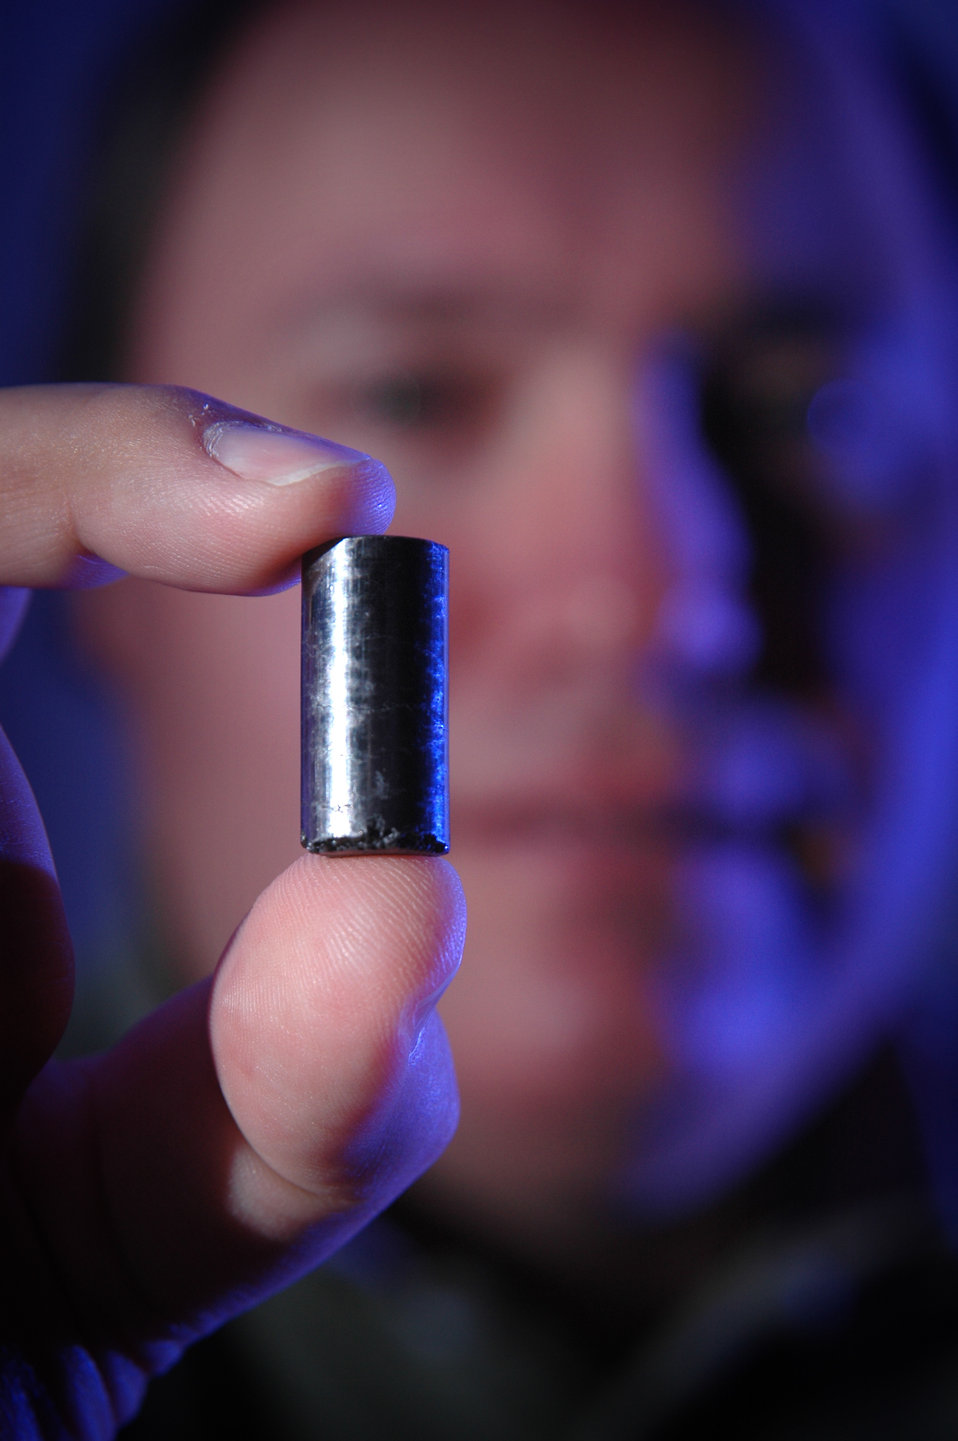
At INL the Advanced Test Reactor has been testing fuels & materials for the Nuclear Navy, government and commercial industry since 1967. The facility also produces valuable medical and industrial isotopes.